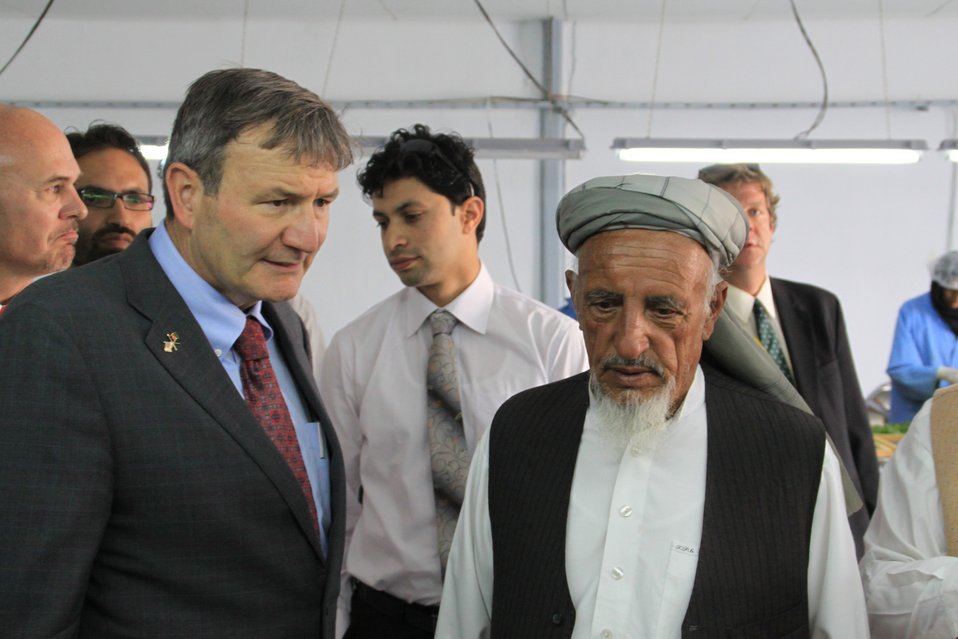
Badam Bagh Farm